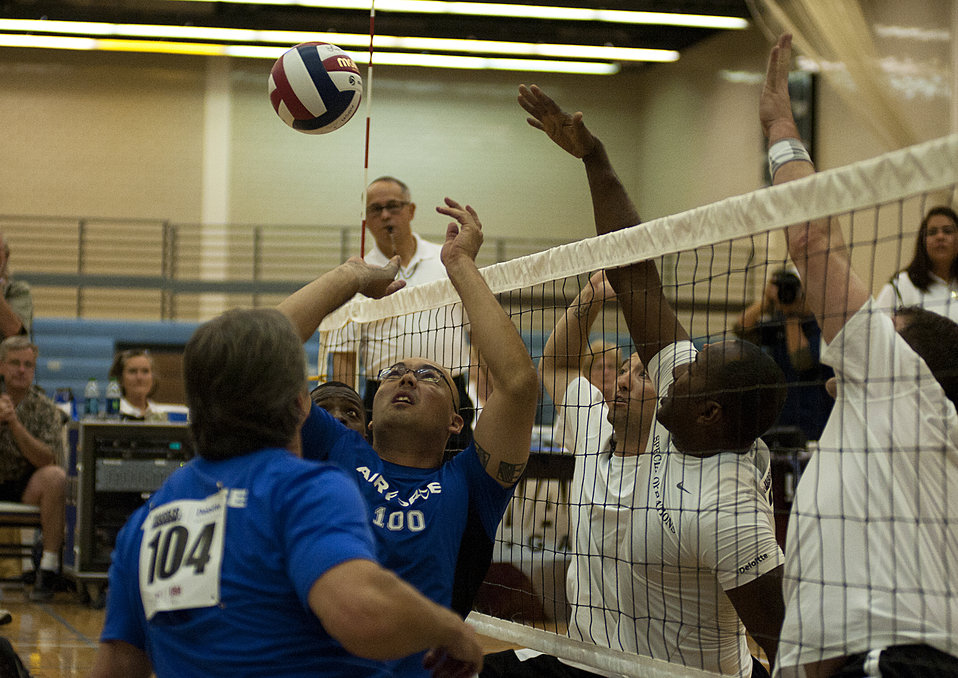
Warrior Games

U.S. Air Force Master Sgt. Christopher Aguilera, back center, with the Air Force team, battles for the ball during his team's sitting volleyballl bronze medal game against the Special Operations Command team during Warrior Games 2012 at the U.S. Air Force Academy in Colorado Springs, Colo., May 3, 2012. Air Force won 25-12 and 25-20.